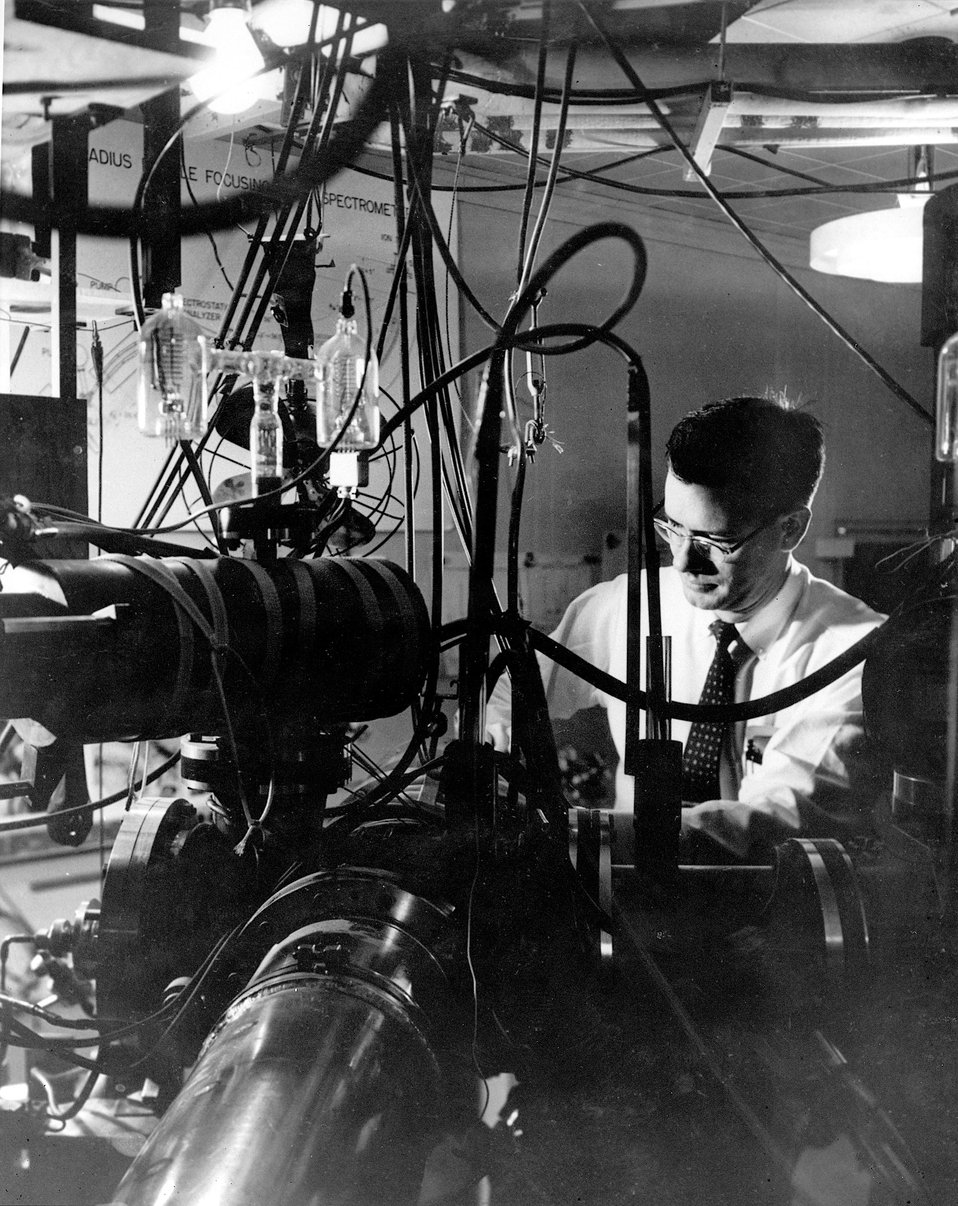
High-precision instrument used for the isotopic analysis of very small amounts of material.
c.1966